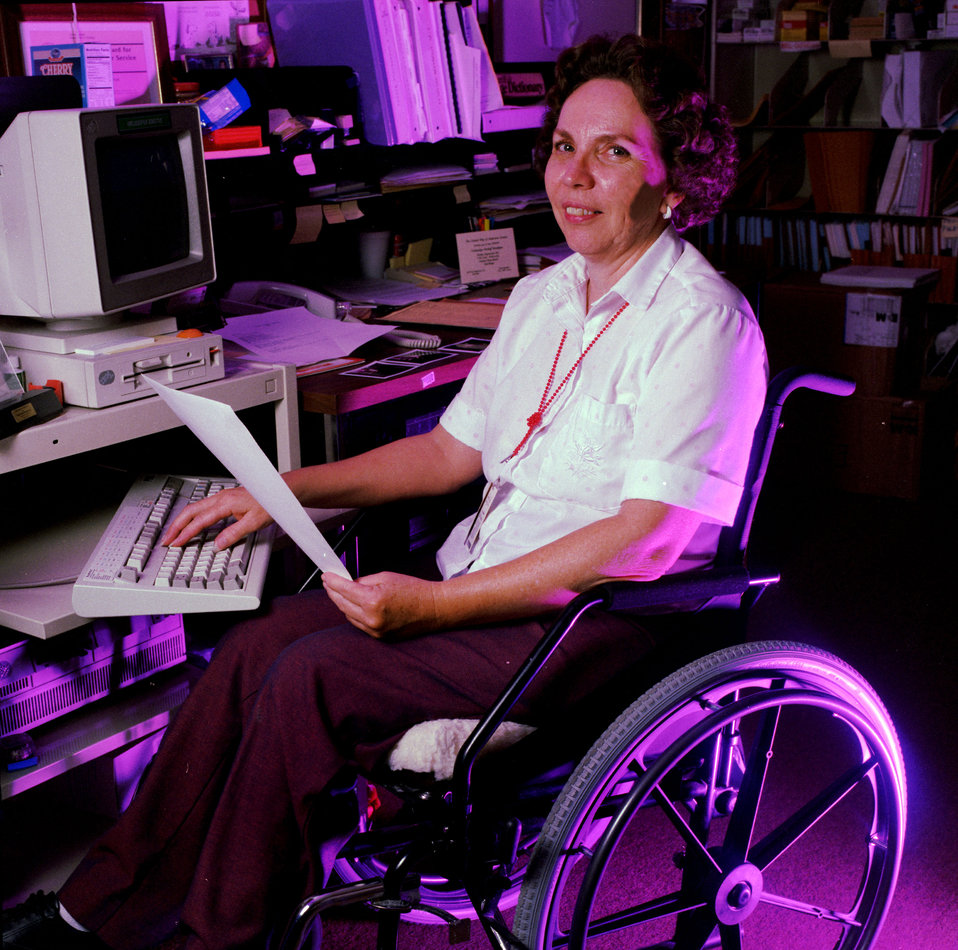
DOE Personal Oak Ridge

94-578-8 DOE photo Lynn Freeny 9-7-1994 Oak Ridge Tennessee